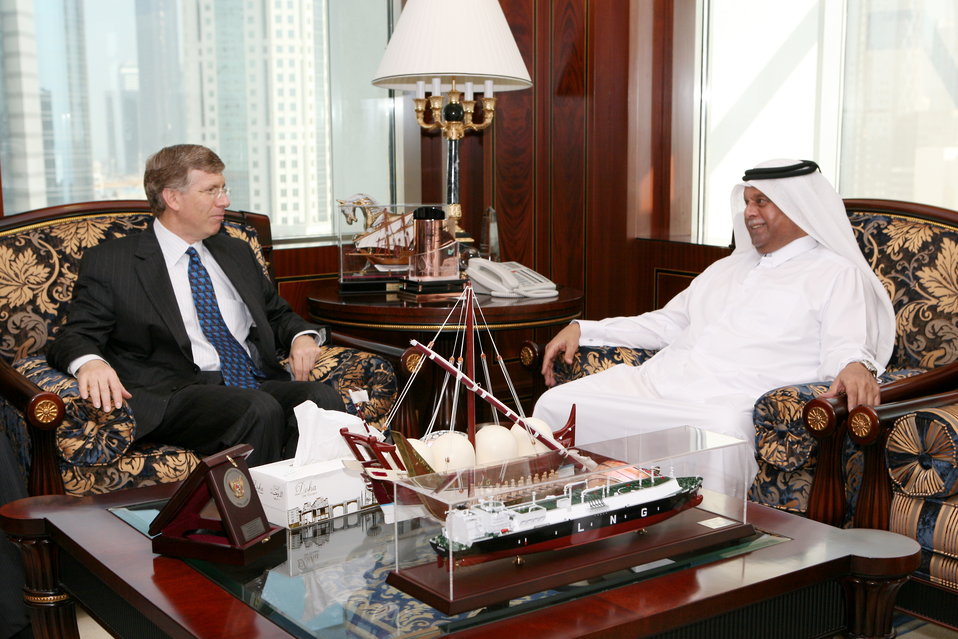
Deputy Secretary Poneman meets with Qatar Deputy Prime Minister and Minister of Energy and Industry Abdulla bin Hamad al-Attiyah.